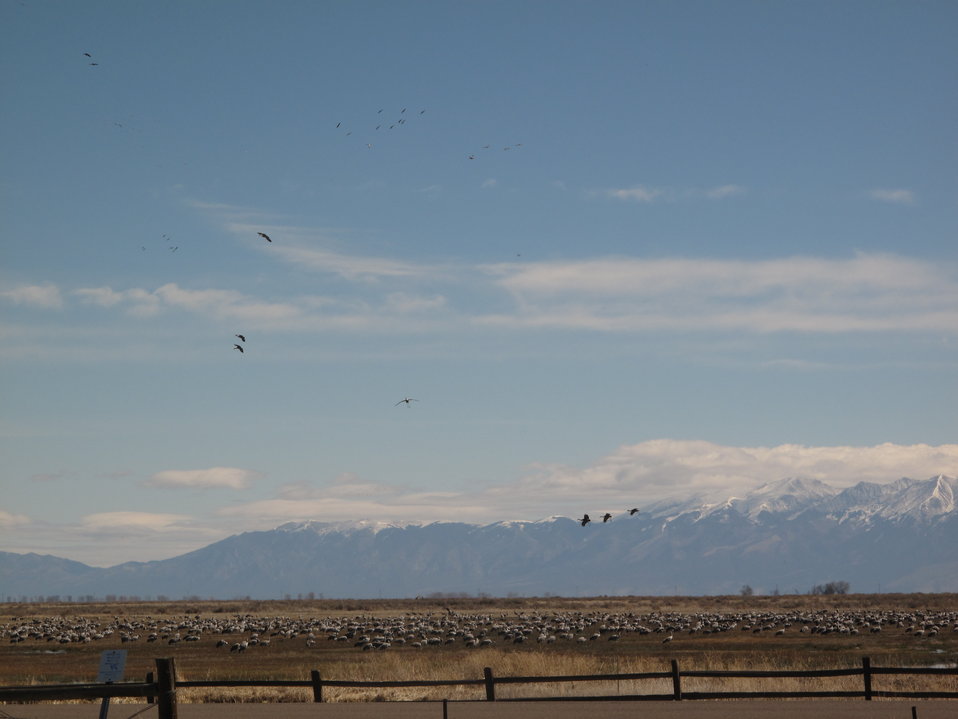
Sandhill Cranes at Monte Vista National Wildlife Refuge

The Monte Vista National Wildlife Refuge serves as a stopover point for cranes during their northward and southward migrations each year. The birds using the Refuge nest primarily in Montana, Idaho and Wyoming and spend winters in New Mexico, Arizona, and Mexico. However, some cranes that visit the Refuge may nest as far away as Alaska and western Siberia.